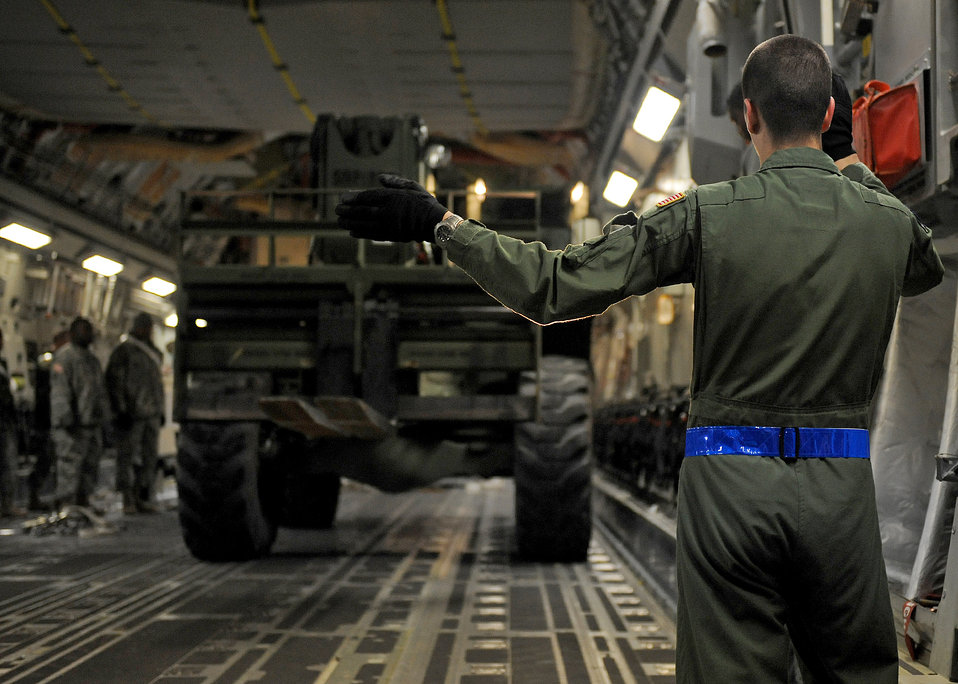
Cross-command communication fuels Haiti relief efforts

Airman 1st Class Alec Parker directs a vehicle into the bay of a C-17 Globemaster III Jan. 22, 2010, at Langley Air Force Base, Va., in support Operation Unified Response. Langley AFB Airmen and Army members from Fort Eustis, Va., helped McChord AFB, Wash., Airmen load equipment and supplies onto the aircraft. Airmen Parker is a 7th Airlift Squadron loadmaster from McChord Air Force Base, Wash.